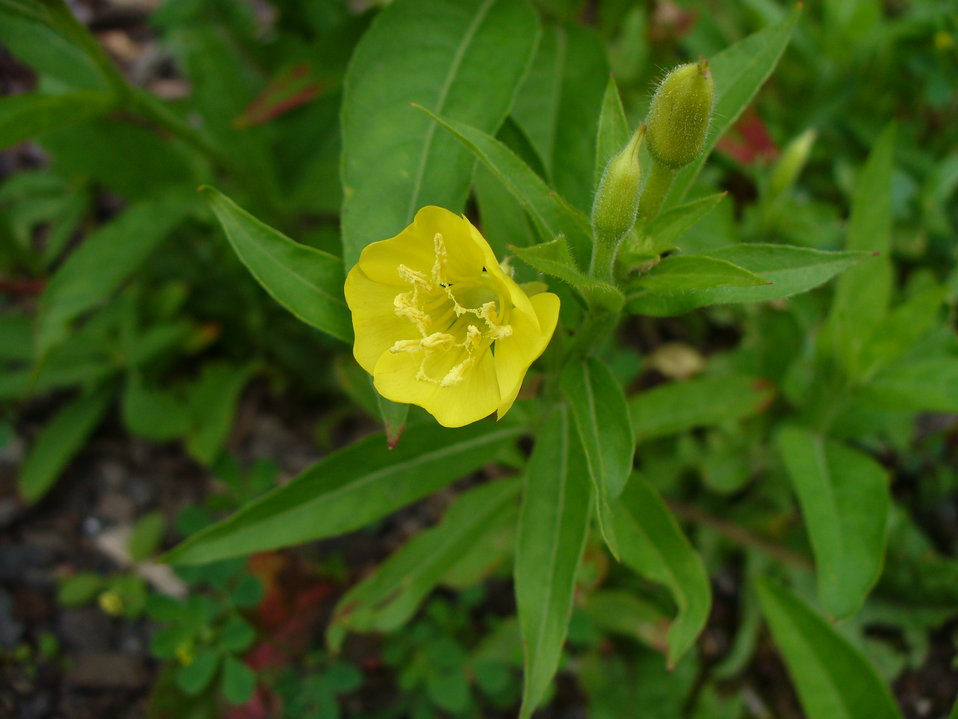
I am the originator of this photo. I hold the copyright. I release it to the public domain. This photo depicts a flower.